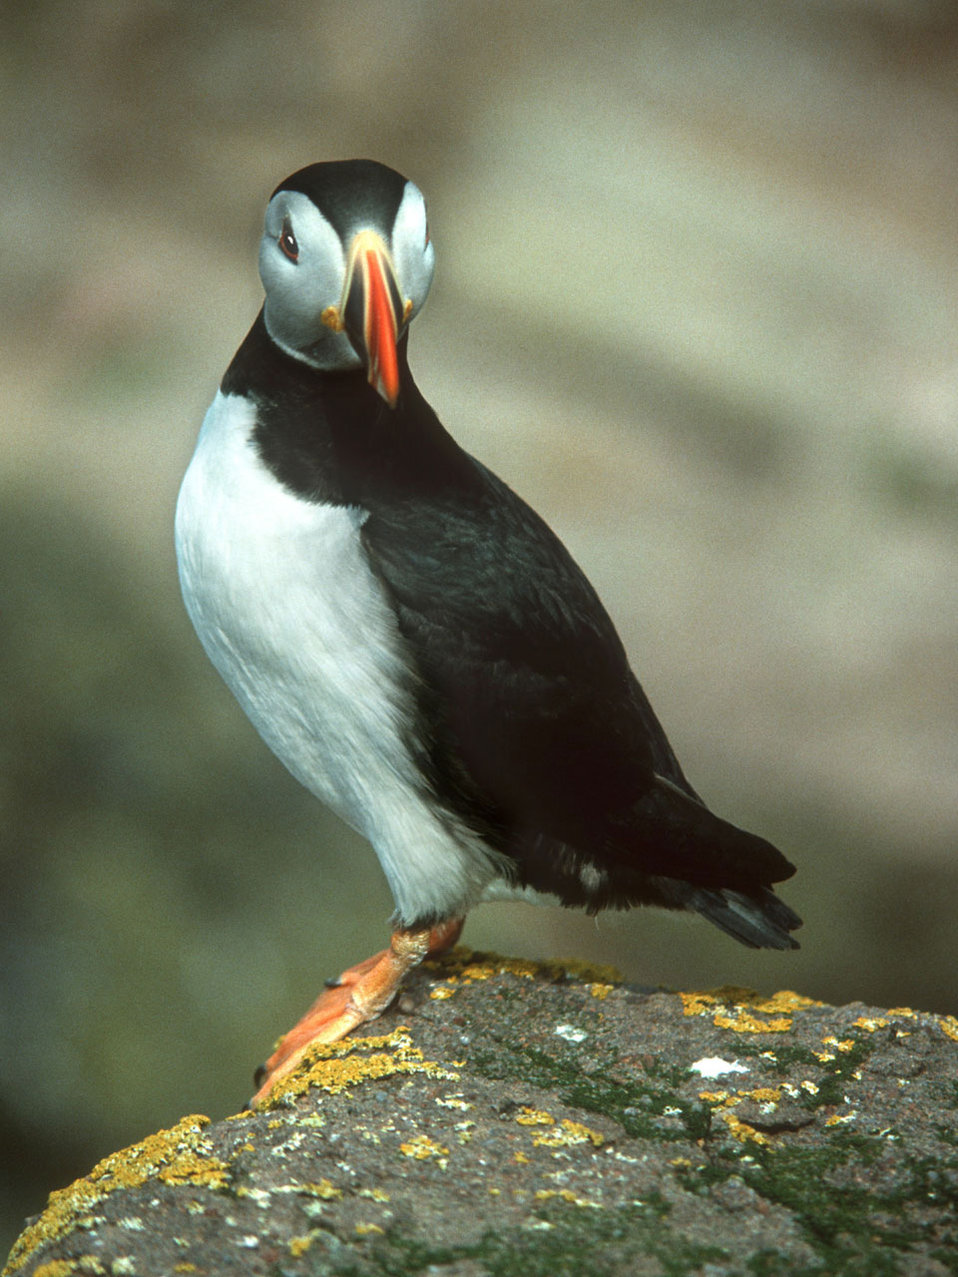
Puffin portrait.